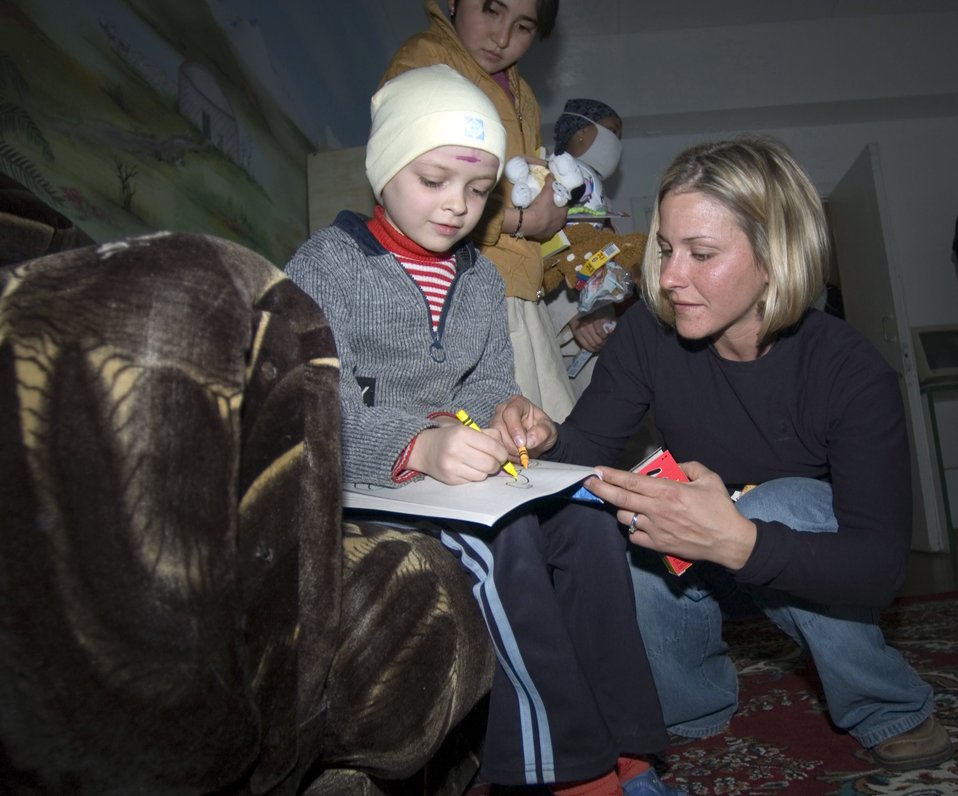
Cancer kids

BISHKEK, Kyrgyzstan (AFPN) -- Staff Sgt. Ann Mitchell colors with Raya, a young Kyrgyz girl with cancer. He and other members of the Manas Air Base Outreach Society volunteer their day off to do the work at the center. Since 2003, the Airmen have donated more than $55,000 to help the needy of Kyrgyzstan. The sergeant is a 376th Expeditionary Services Squadron fitness instructor.